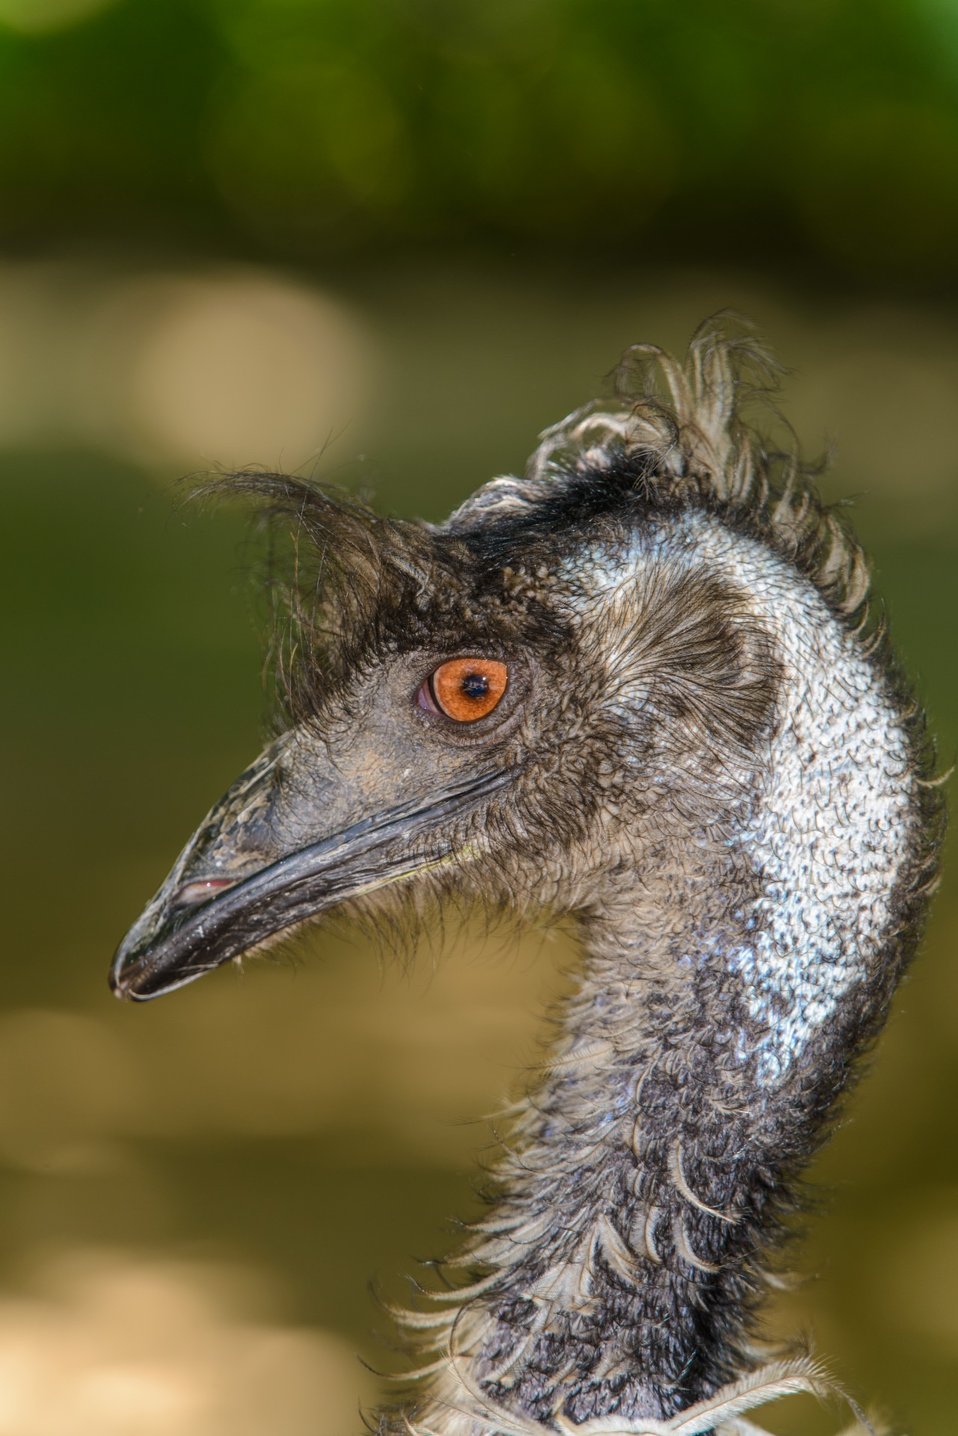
Emu brown.